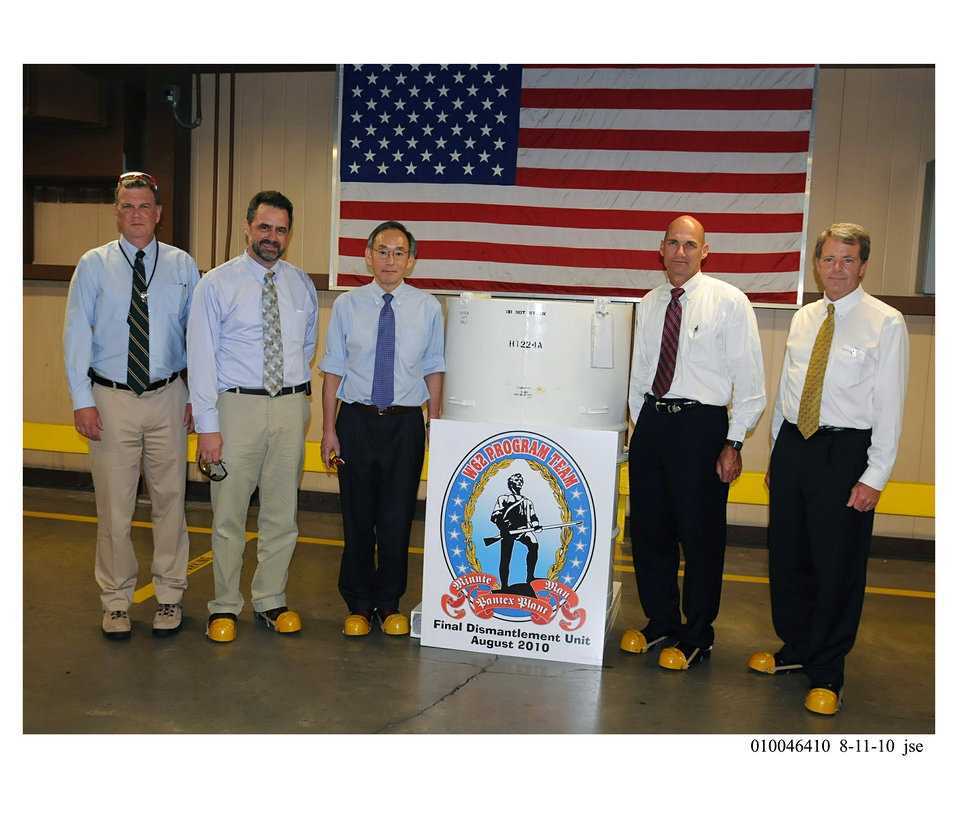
Secretary Chu, NNSA Administrator Thomas D’Agostino and Pantex manager Steve Erhart join NNSA and Pantex tea, in celebrating the dismantlement of the last W62 nuclear warhead. Secretary Chu participated in the final dismantlement during his Aug. 11, 201